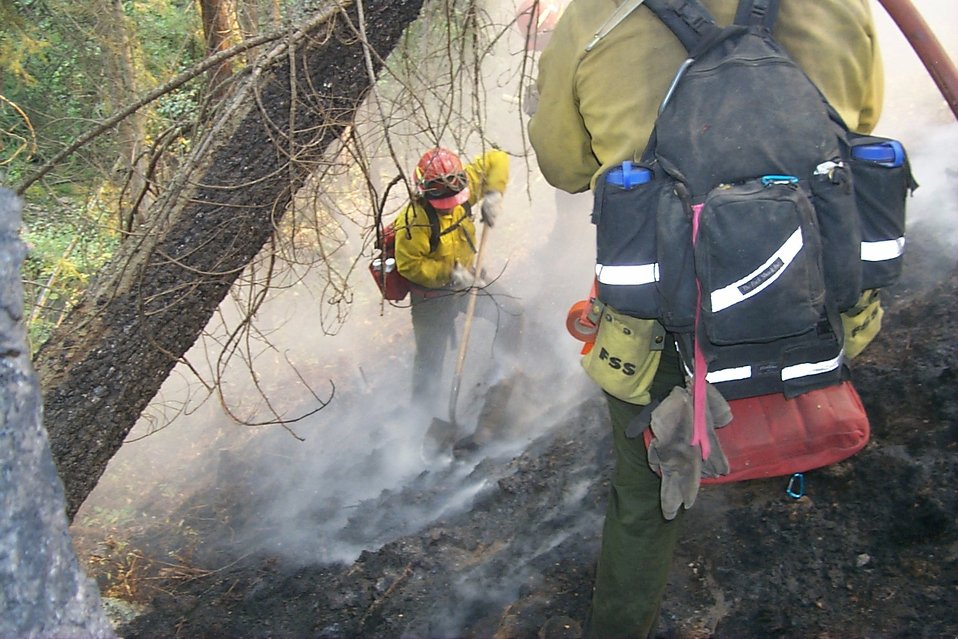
Line crew Fire Clearwater Fire Salmon Field Office USRD Upper Snake River District